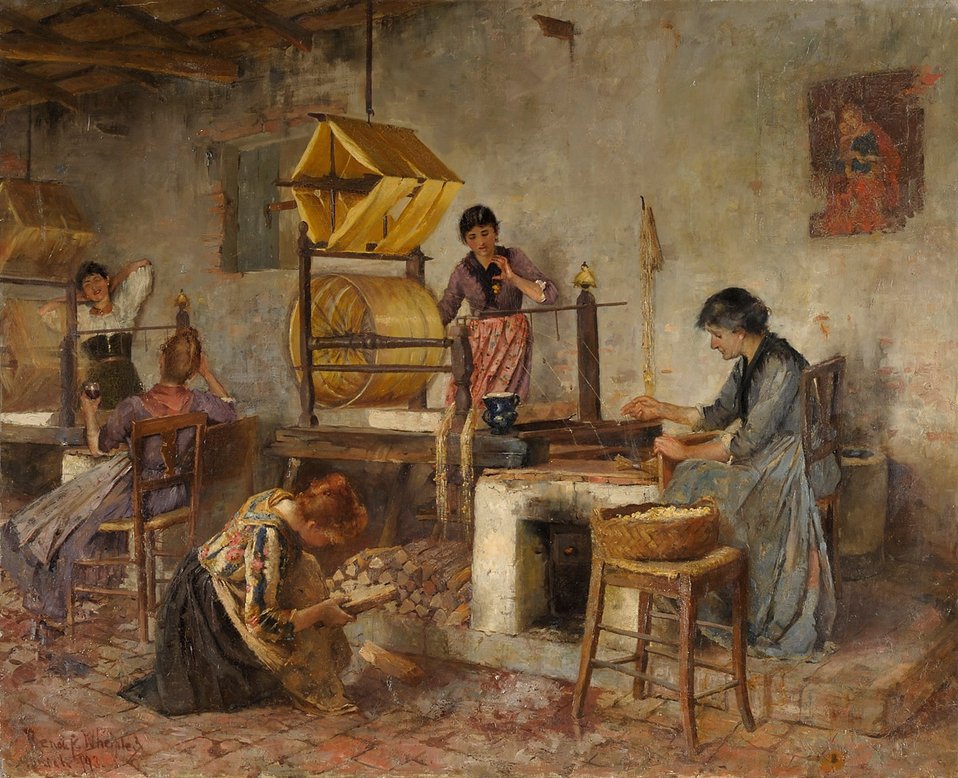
Deutsch: Italienische Frauen mit Haspeln. Signiert. Datiert (18)93, Öl/Lwd./doubl., 100 x 123 cm Italian woman with Spinners weasels (clock reels)